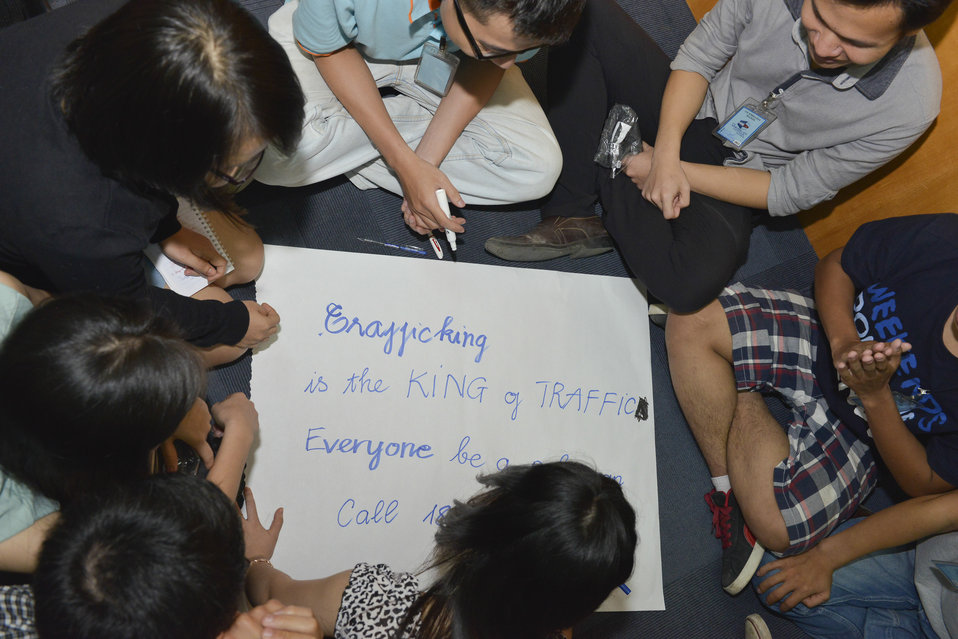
MTV Exit Talk to Engage Students in the Fight against Human Trafficking

Hanoi. June 5, 2014.